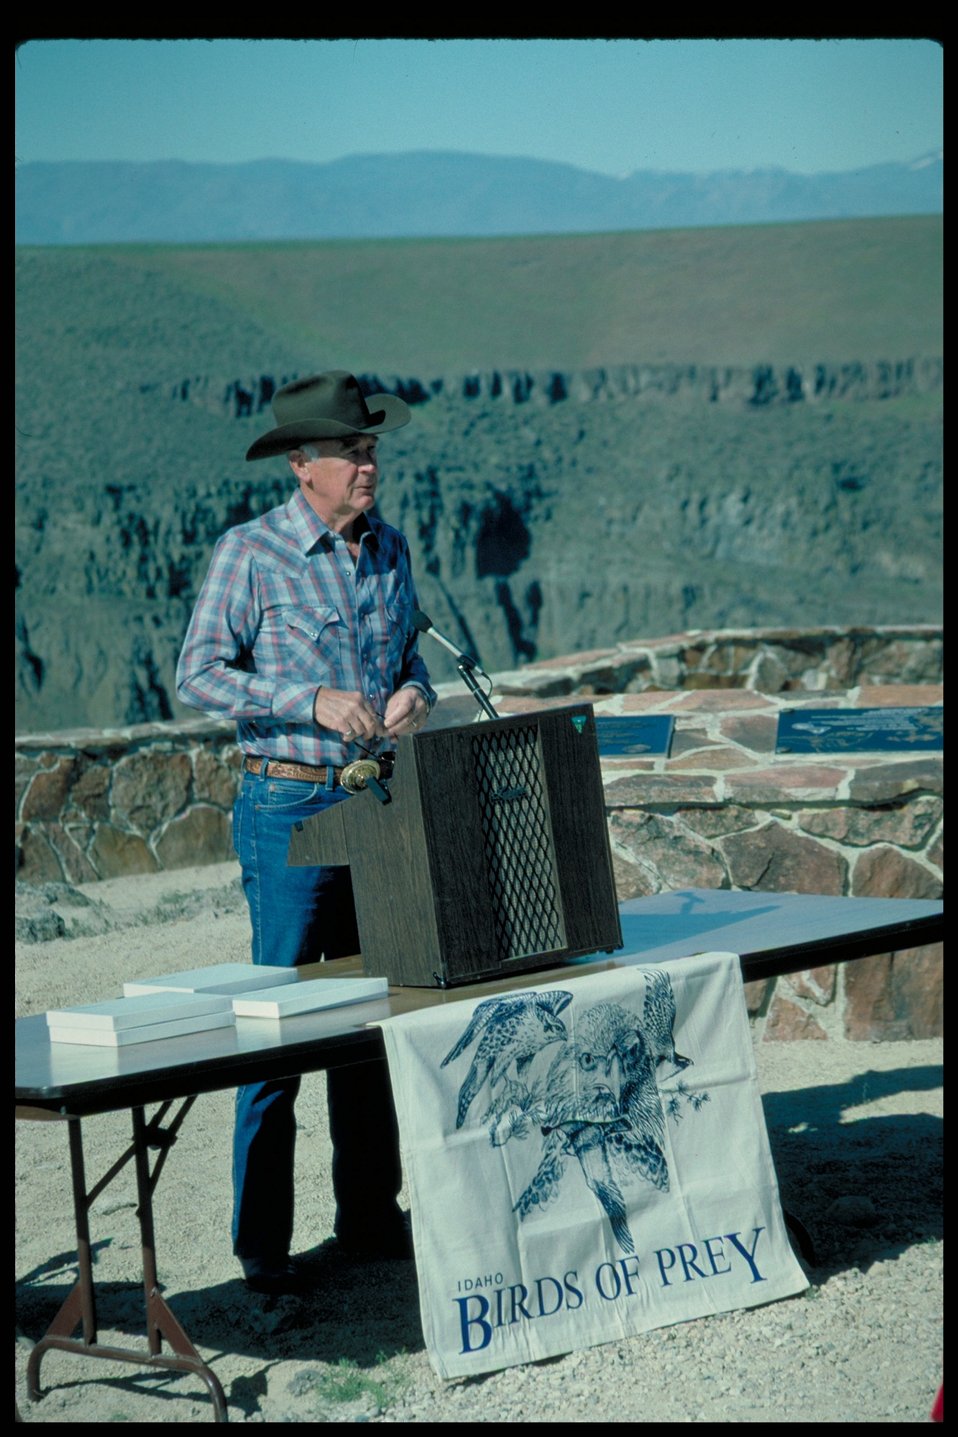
Birds of Prey National Conservation Area BOP Owyhee Field Office LSRD Lower Snake River District